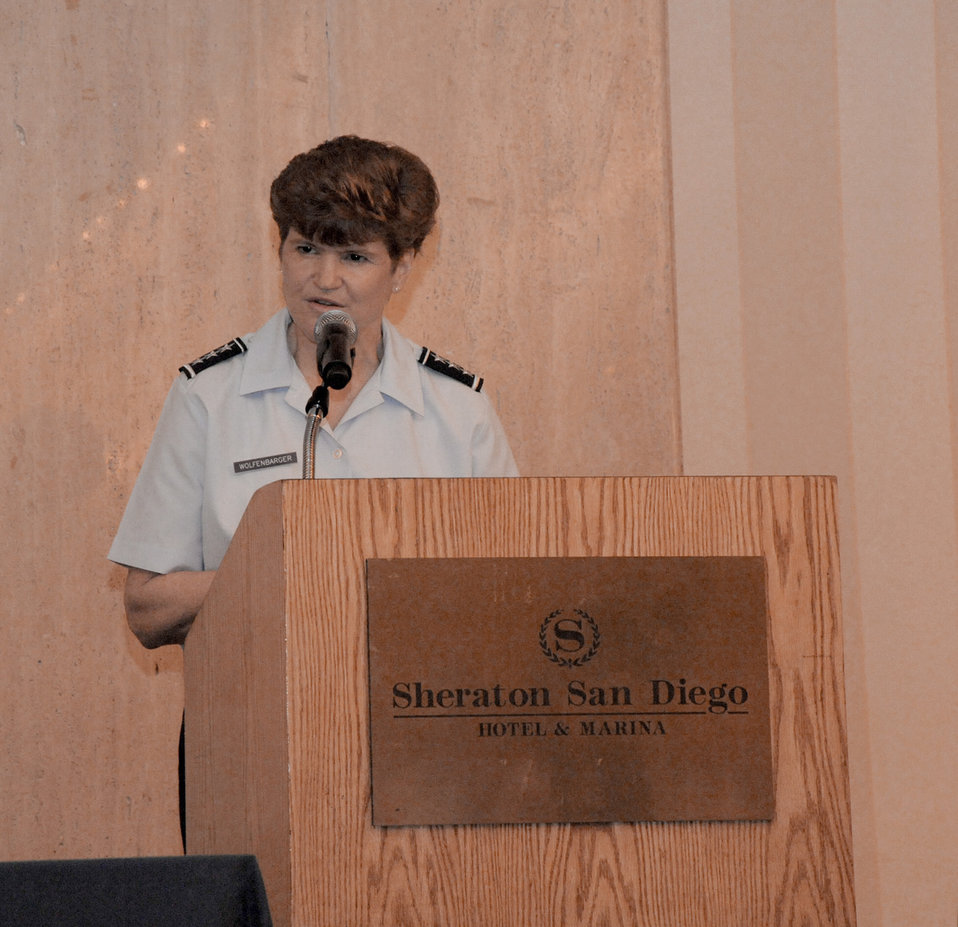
Air Force pioneer speaks at women's conference

Lt. Gen. Janet Wolfenbarger speaks to more than 130 Airmen on her experiences and lessons learned during the Joint Women's Leadership Symposium March 16, 2011, in San Diego, Calif. Military women from across the nation have gathered here March 15 and 16 to focus on professional development. General Wolfenbarger is the vice commander of the Air Force Materiel Command.